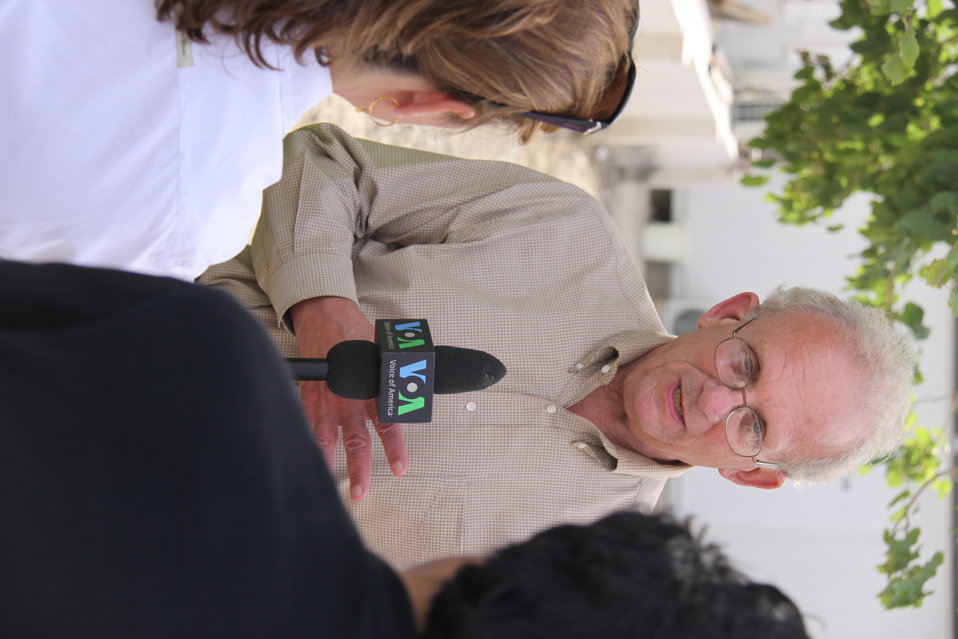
Meeting with Local Leaders in Kandahar